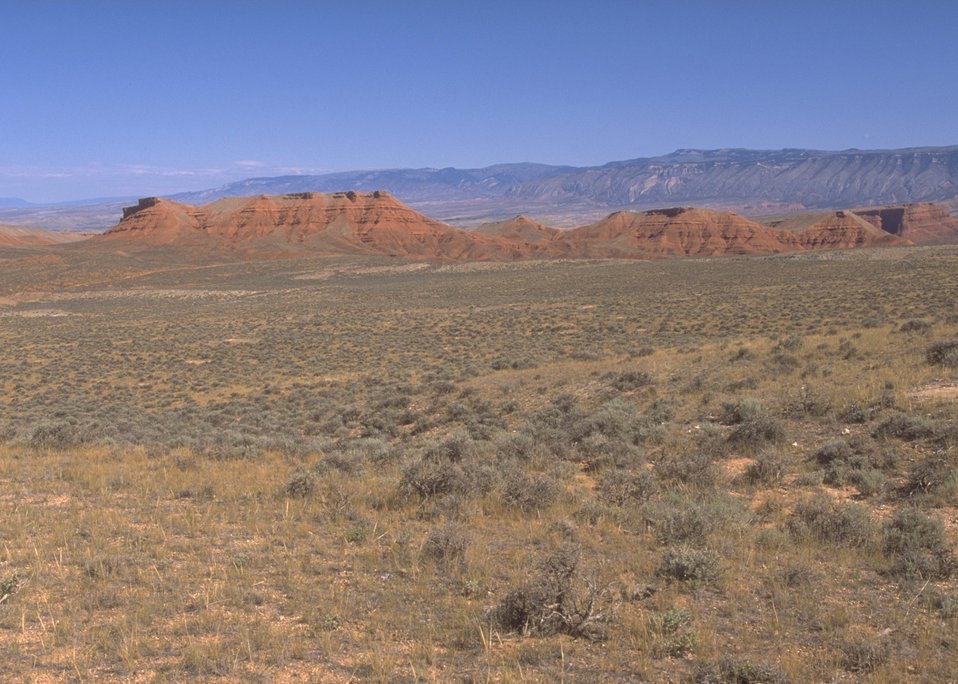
View along the Red Gulch/Alkali Back Country Byway, Worland Field Office.